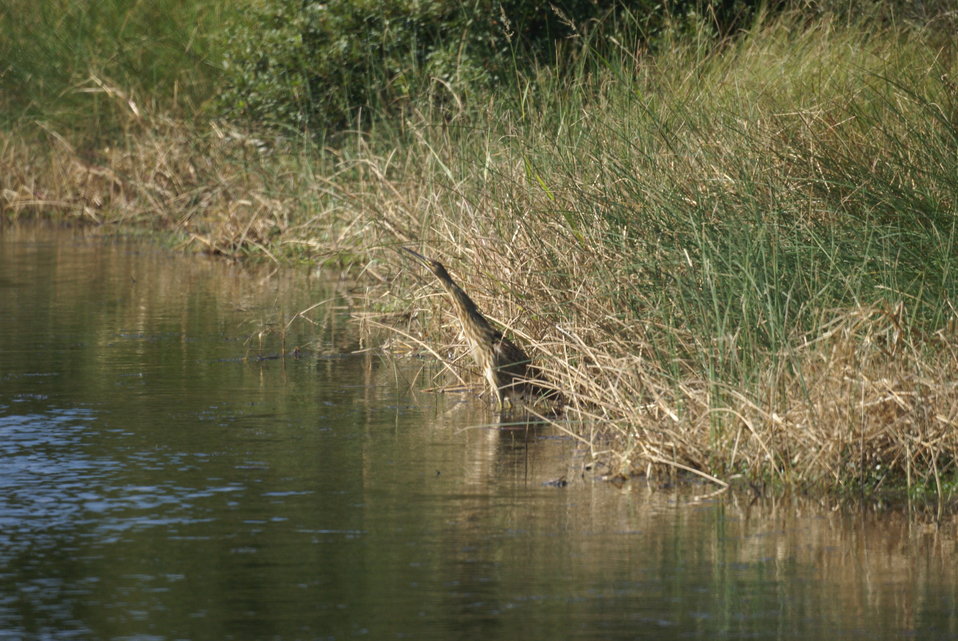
American bittern at Back Bay National Wildlife Refuge in Virginia.